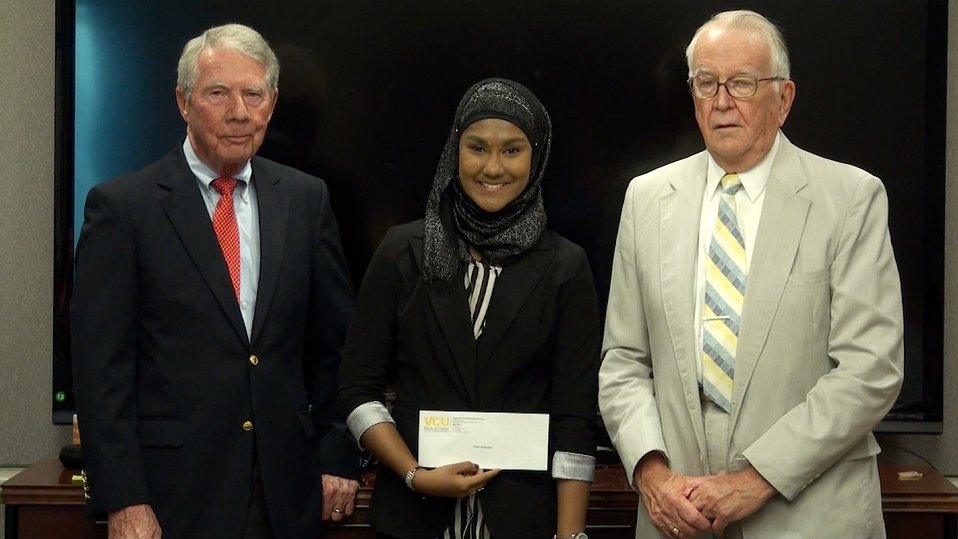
130813-NIDA-Zarin Rahman

Friends of NIDA’s Charles O’Keefe (L) and Bill Dewey (R,) gives award to Zarin Ibnat Rahman, (1st Place Winner.)